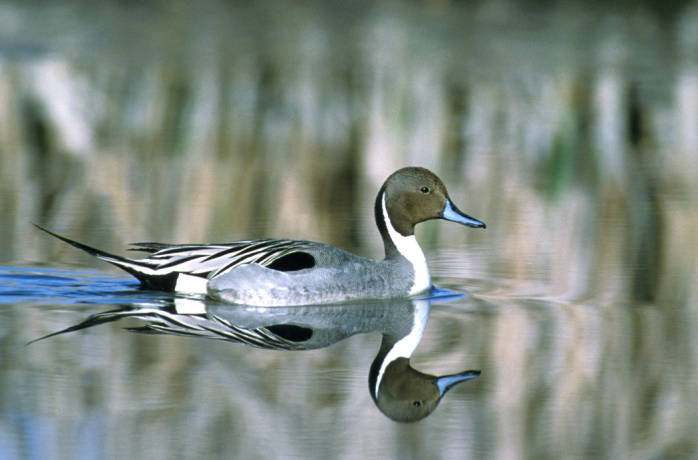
northern pintail

Lower Klamath National Wildlife Refuge